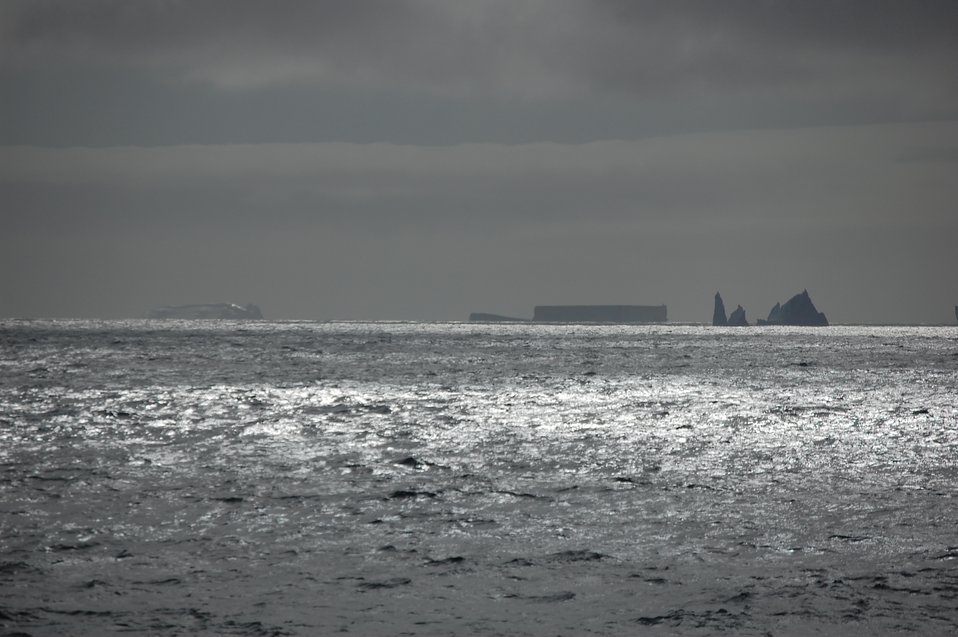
Icebergs